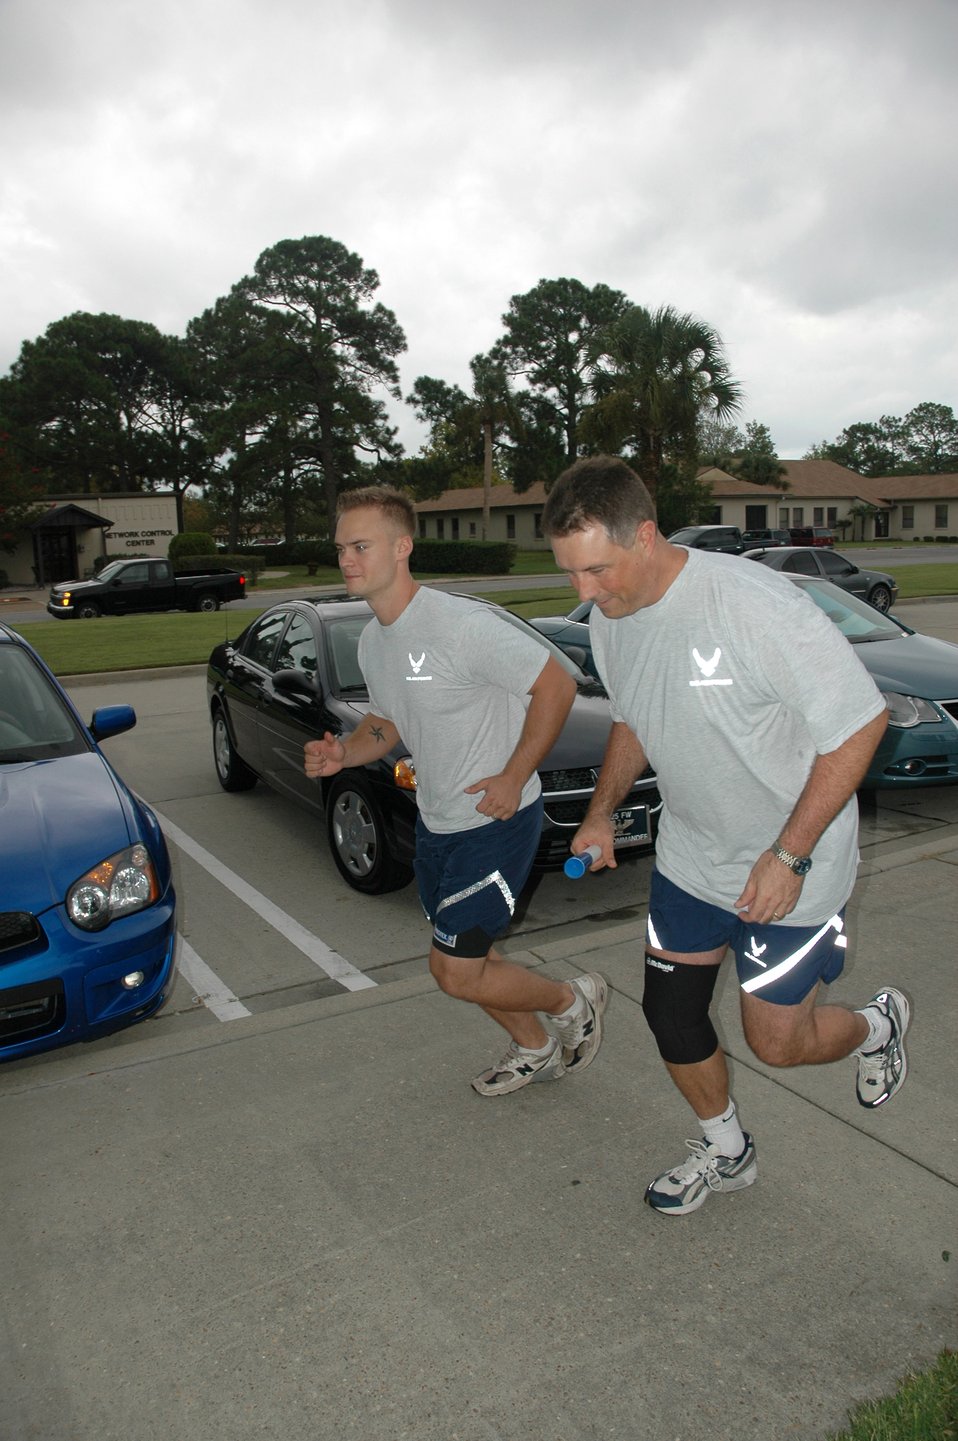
Airmen run 24-hours straight in rememberance of POW/MIA

Col. John Bird begins a 24-hour vigil run along side Senior Airman James Mitchell. Airmen at Tyndall Air Force Base, Fla. held the run in support of National POW/MIA Recognition Day Sept. 20 through the 21. Colonel Bird is vice commander of the 325th Fighter Wing.